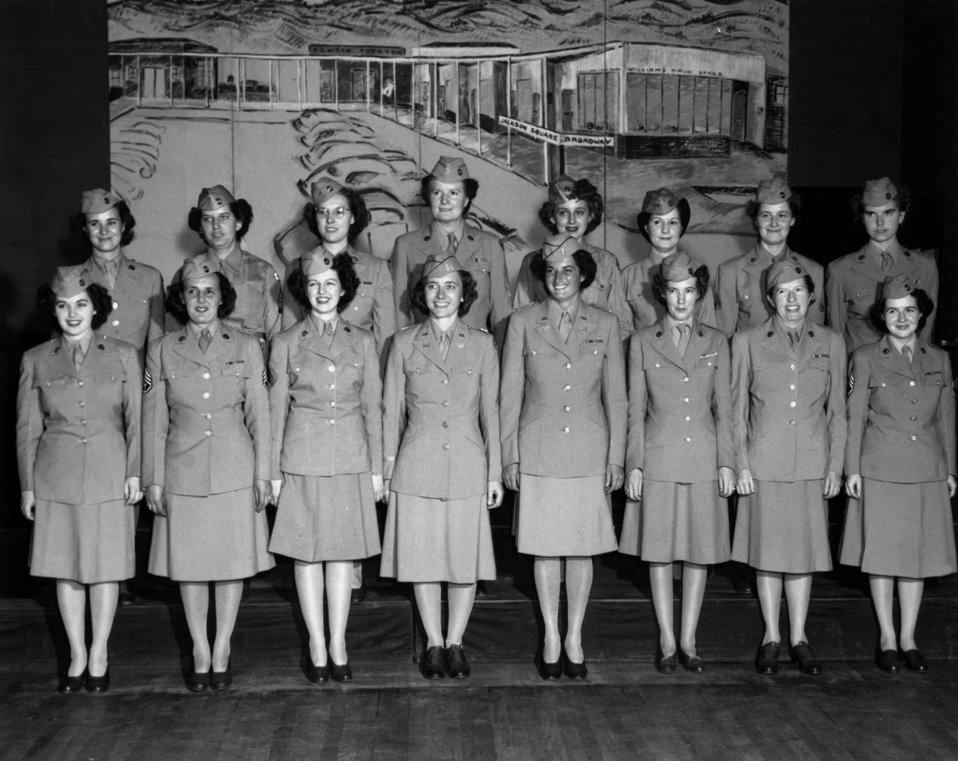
WAC- Women's Army Corps Birthday Party Oak Ridge

PRO564-4 DOE photo by Ed Westcott

WAC- Women's Army Corps Birthday Party Oak Ridge Tennessee 5-14-1945